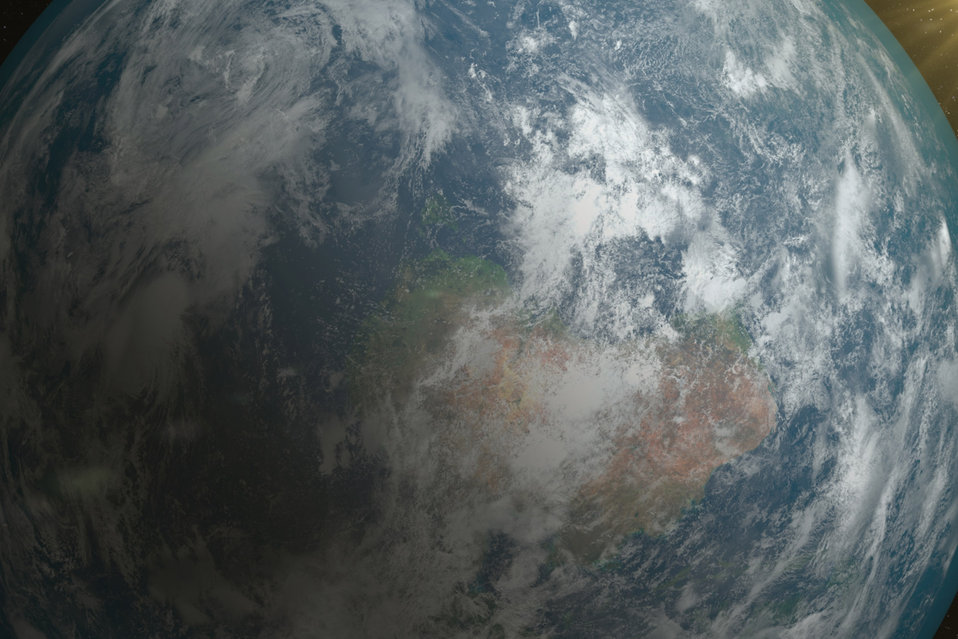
Zoom to the planet

View of the earth from a satellite.